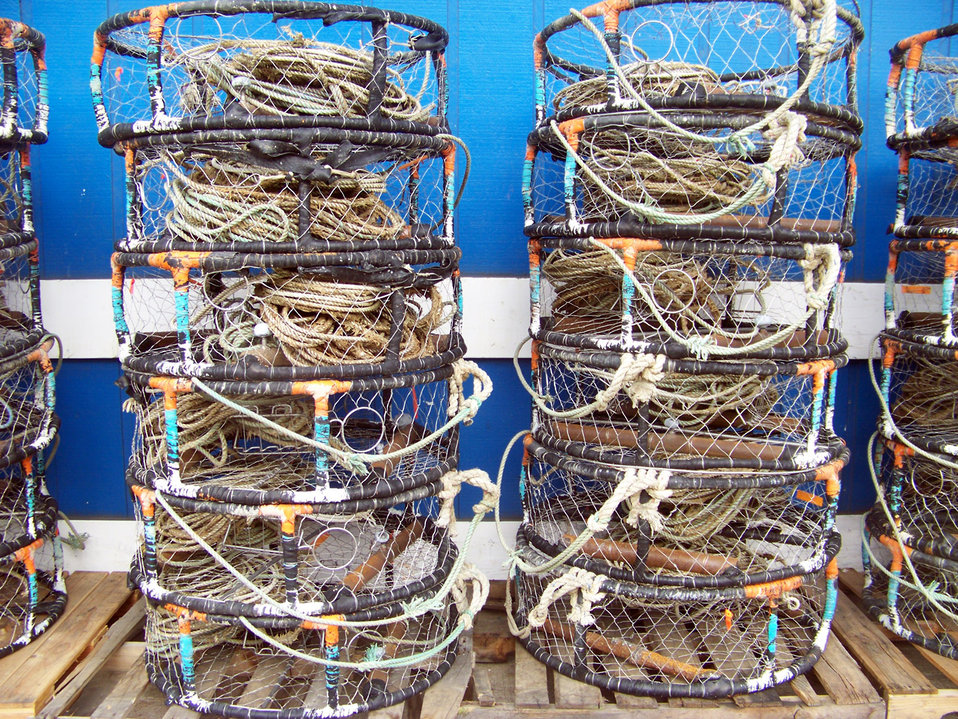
Crab pots in a row after the day's haul.